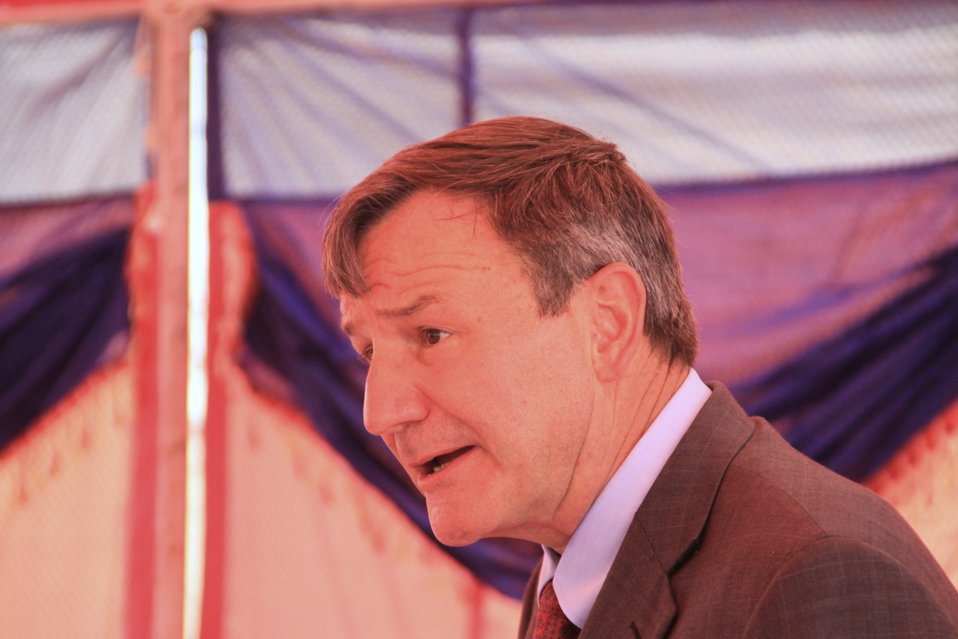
Badam Bagh Farm